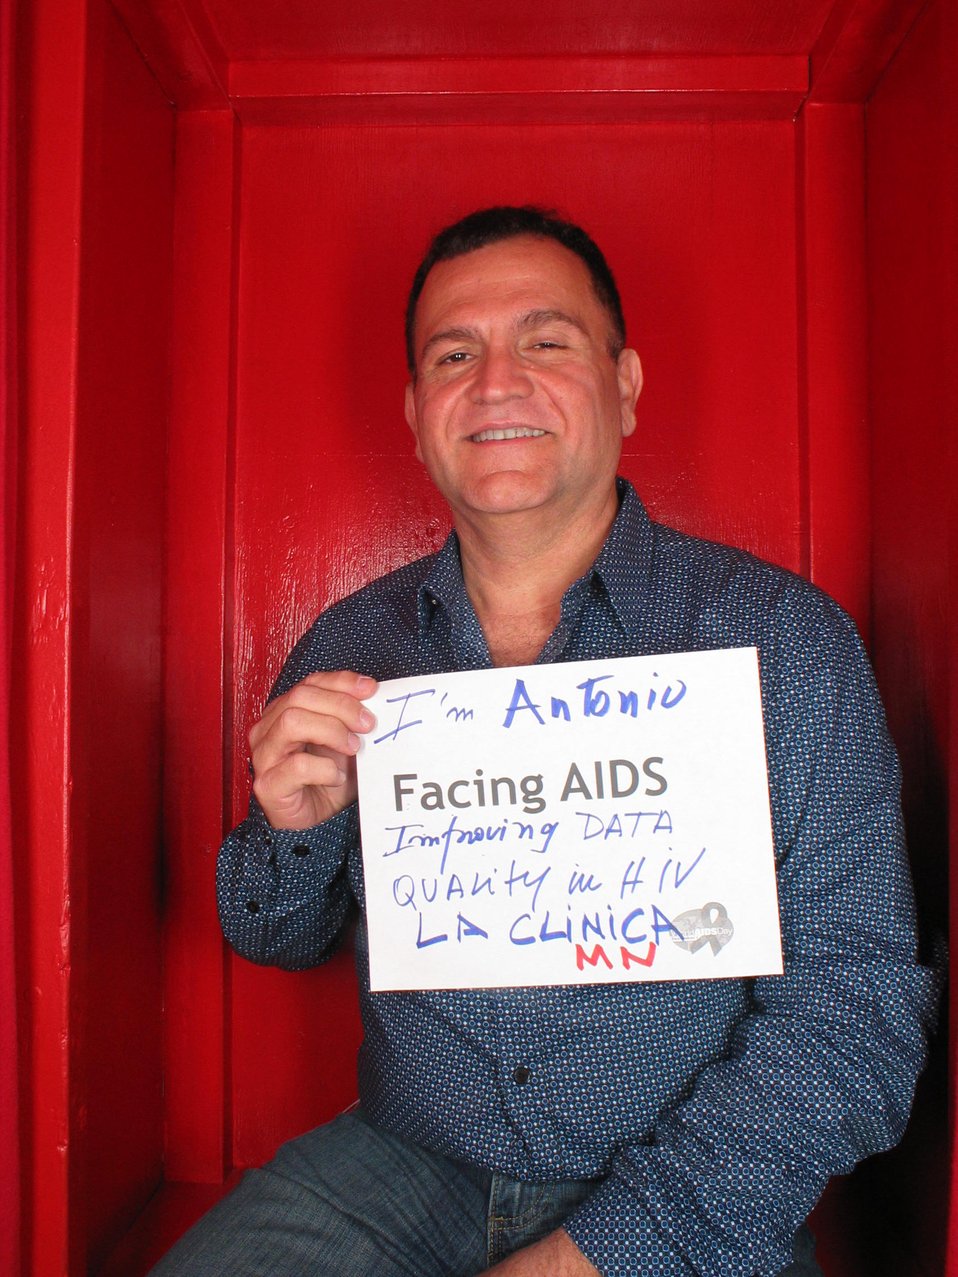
I'm Facing AIDS to improve DATA quality in HIV